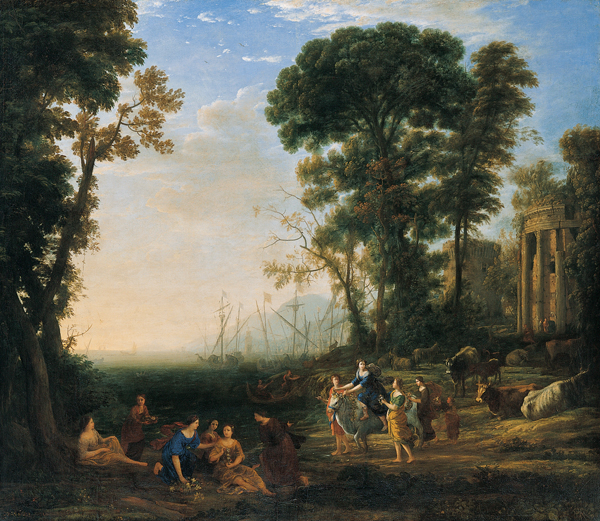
'Coast Scene with Europa and the Bull', oil on canvas painting by Claude Lorrain